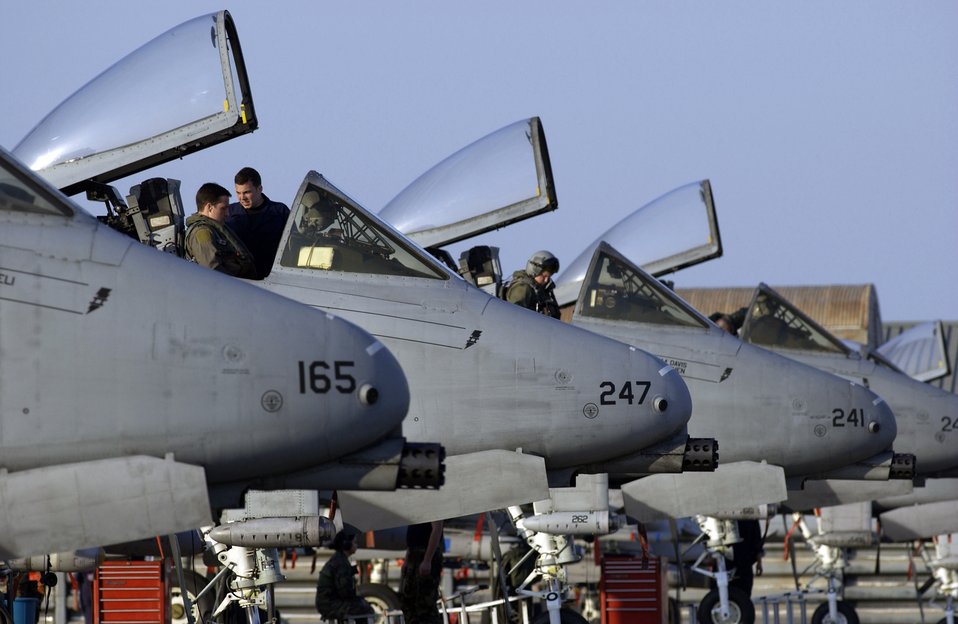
Cope Tiger '06

KORAT ROYAL AIR FORCE BASE, Thailand (AFPN) -- Aircrews from the 25th Fighter Squadron perform pre-flight procedures during an exercise Cope Tiger '06 mission here Feb. 8. The crews are some of the 300 U.S. servicemembers participating in the exercise here, about 110 miles northeast of Bangkok. An additional 1,000 Thai and Singaporean forces are participating in the exercise. Cope Tiger '06 provides air-to-air, air-to-ground and large force employment training for crews while expanding the capabilities and readiness of U.S. and allied forces. Cope Tiger '06 runs through Feb. 18.